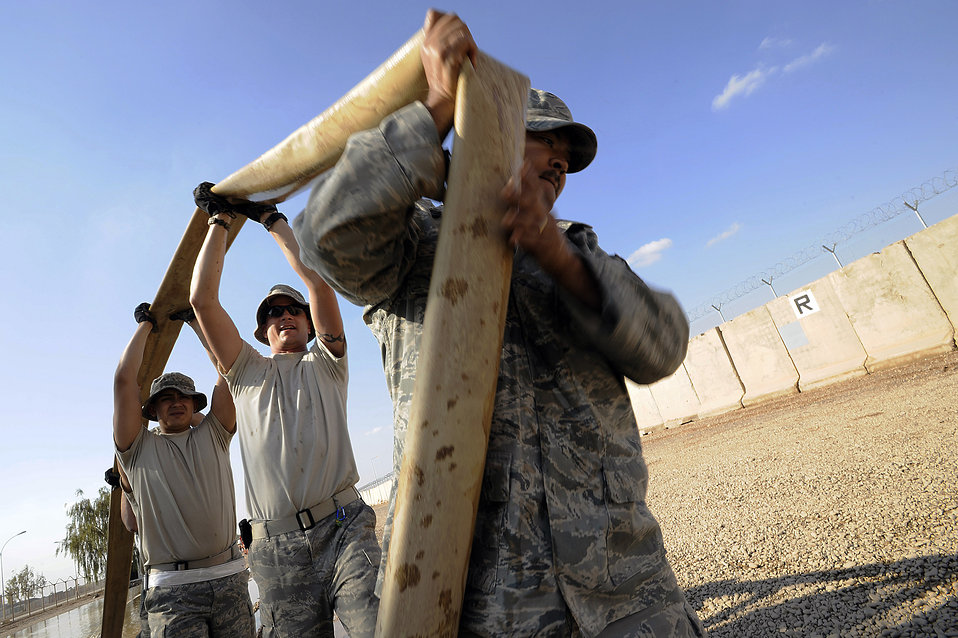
Did someone call a plumber?

Staff Sgt. Mervie Dotson (front to back), Tech. Sgt. Eric Miner and Senior Airman Christian Crespo drain a hose while pumping floodwater to an unused yard Nov. 3 at Joint Base Balad, Iraq. All three Airmen are utilities systems technicians with the 332nd Expeditionary Civil Engineer Squadron. Sergeant Dotson, a native of Tyler, Texas, is deployed from Barksdale Air Force Base, Ga. Sergeant Miner, a native of Concord, N.H., is deployed from McConnell AFB, Kan. Airman Crespo, a native of Dallas, is deployed from Malmstrom AFB, Mont.